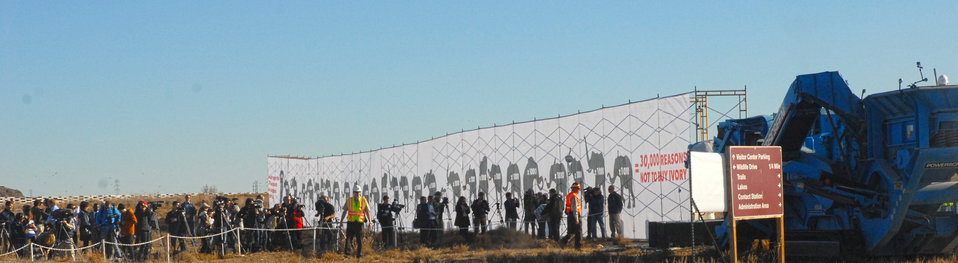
The News Media Gathers to Watch the Crush